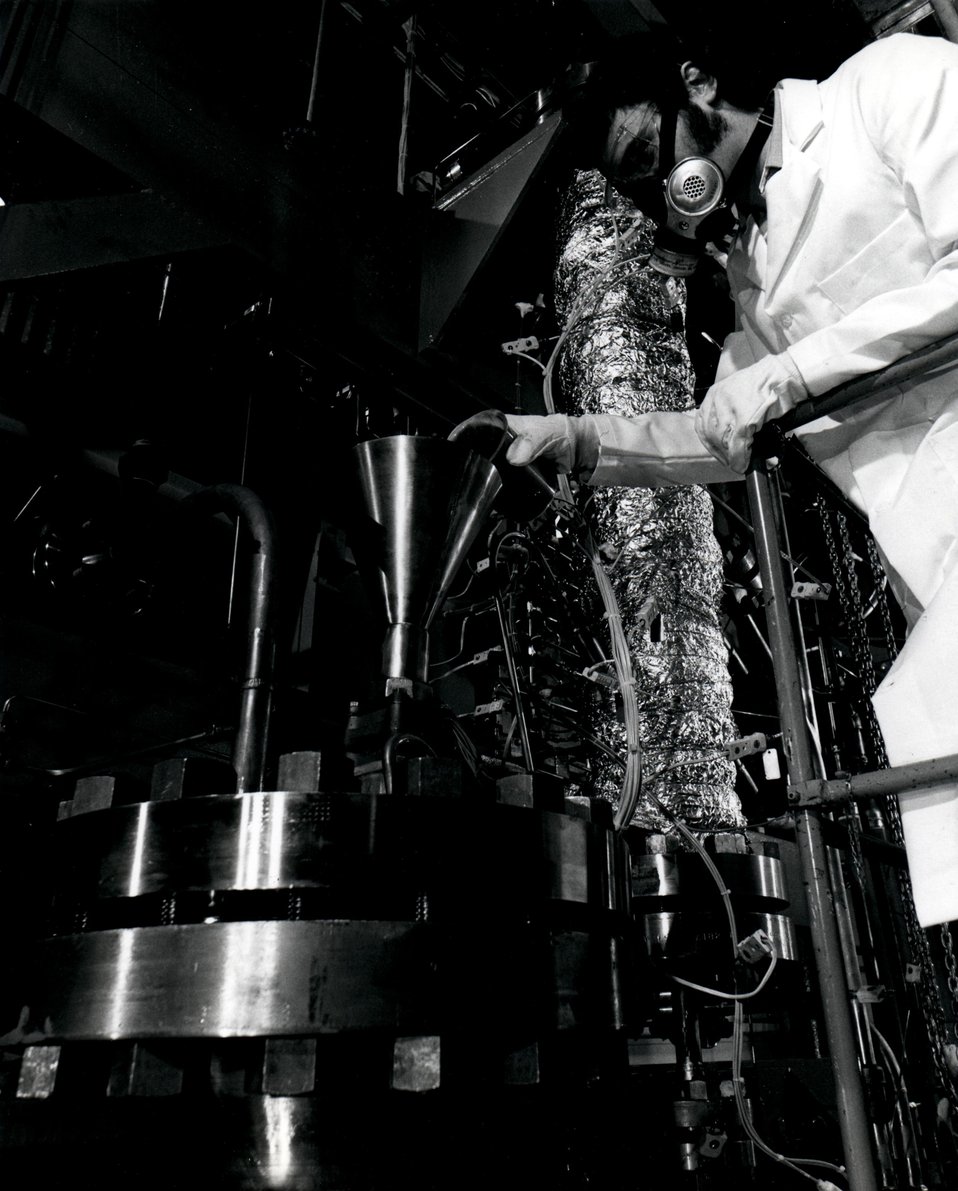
ERDA News, Vol. 1, #15, pg. 5, Coal Research.